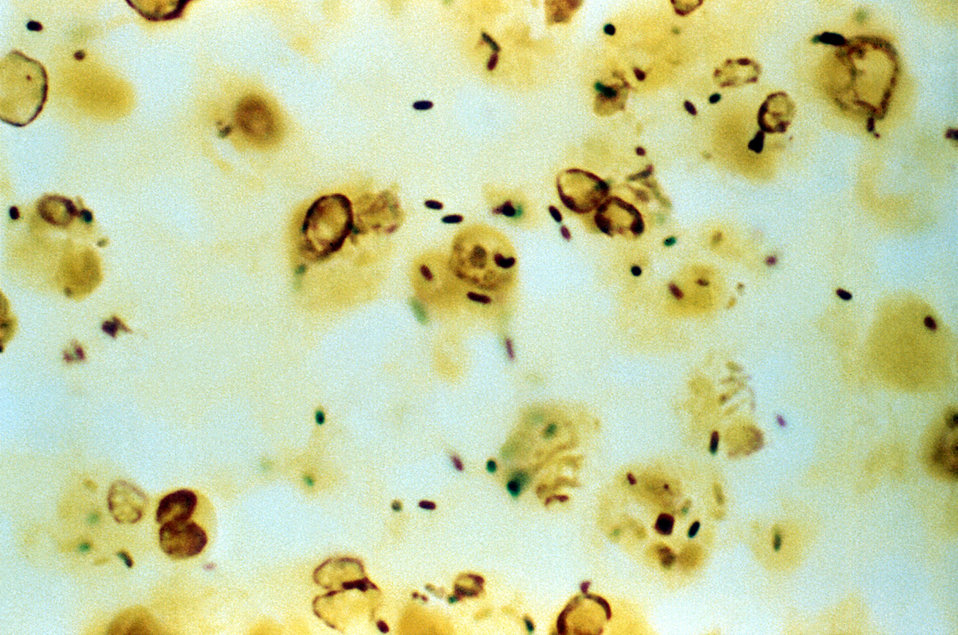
This micrograph of a biopsied lung tissue specimen stained with the CDC's modified Dieterle silver impregnation procedure, revealed small, blunt, pleomorphic intracellular, and extracellular bacilli, which stain brown to black against a pale yellow background; Mag. 500x.